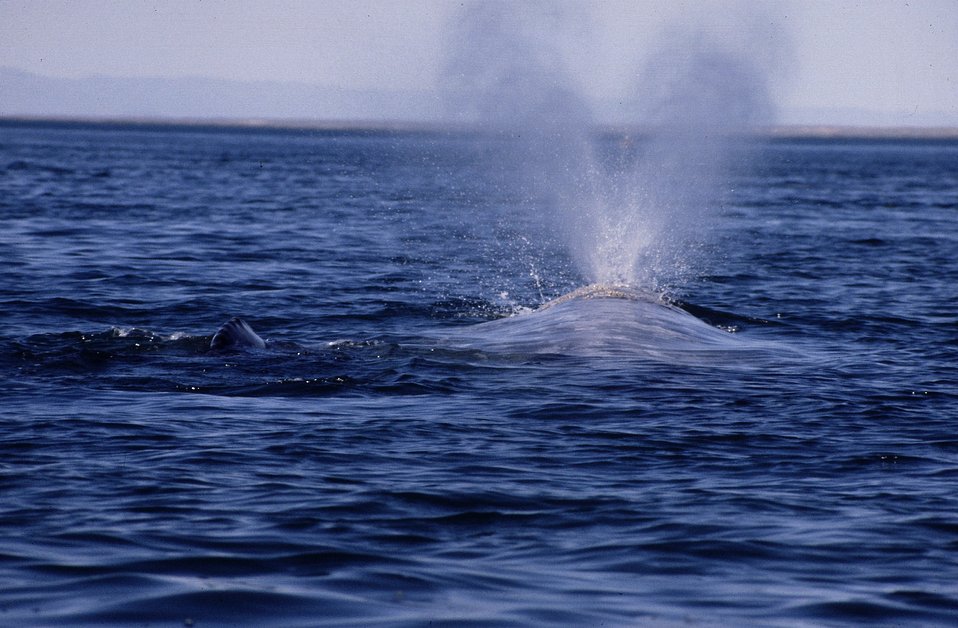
Gray whale blowing with calf by side.